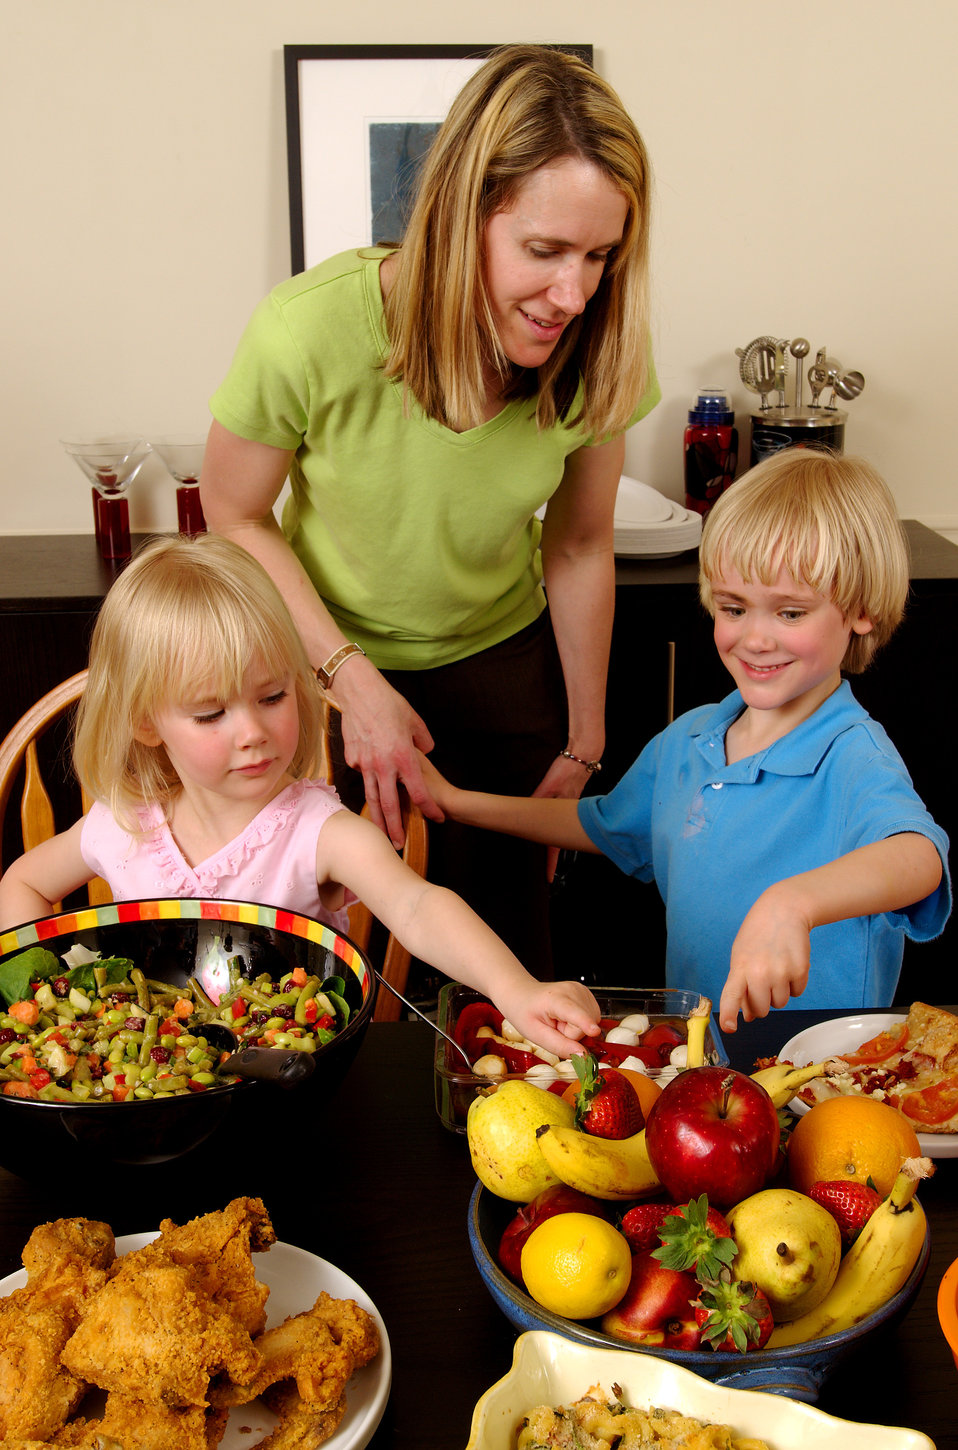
This image depicts a mother and her two young children at a dining table, upon which was plated a large quantity of foods representing a number of different food groups: grains, fruits, vegetables, milk products, meats/poultry/fish, and nuts/seeds/legumes. All these foods are quite tasty, but some are more nutrient-dense than others, while others are more calorie-dense than the rest. The mother is watching her children pick and choose which foods interests them, and seems to be quite happy with their choice in the bowl of fresh fruits, which are nutrient-dense, high in vitamins, minerals, and antioxidants.